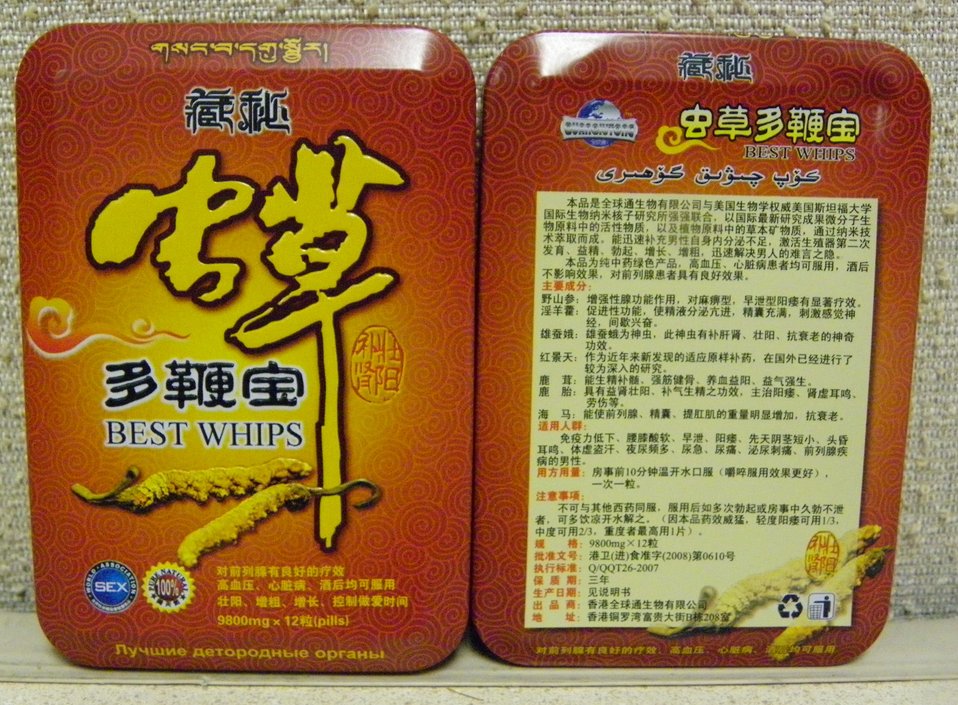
Best Whips

December 19, 2013 - The FDA is advising consumers not to purchase or use 'Best Whips,' a product promoted and sold for sexual enhancement. The product was found to contain undeclared sildenafil. For more information, go to www.fda.gov/Drugs/ResourcesForYou/Consumers/BuyingUsingMe...

And read this Consumer Update: Beware of Fraudulent ‘Dietary Supplements’